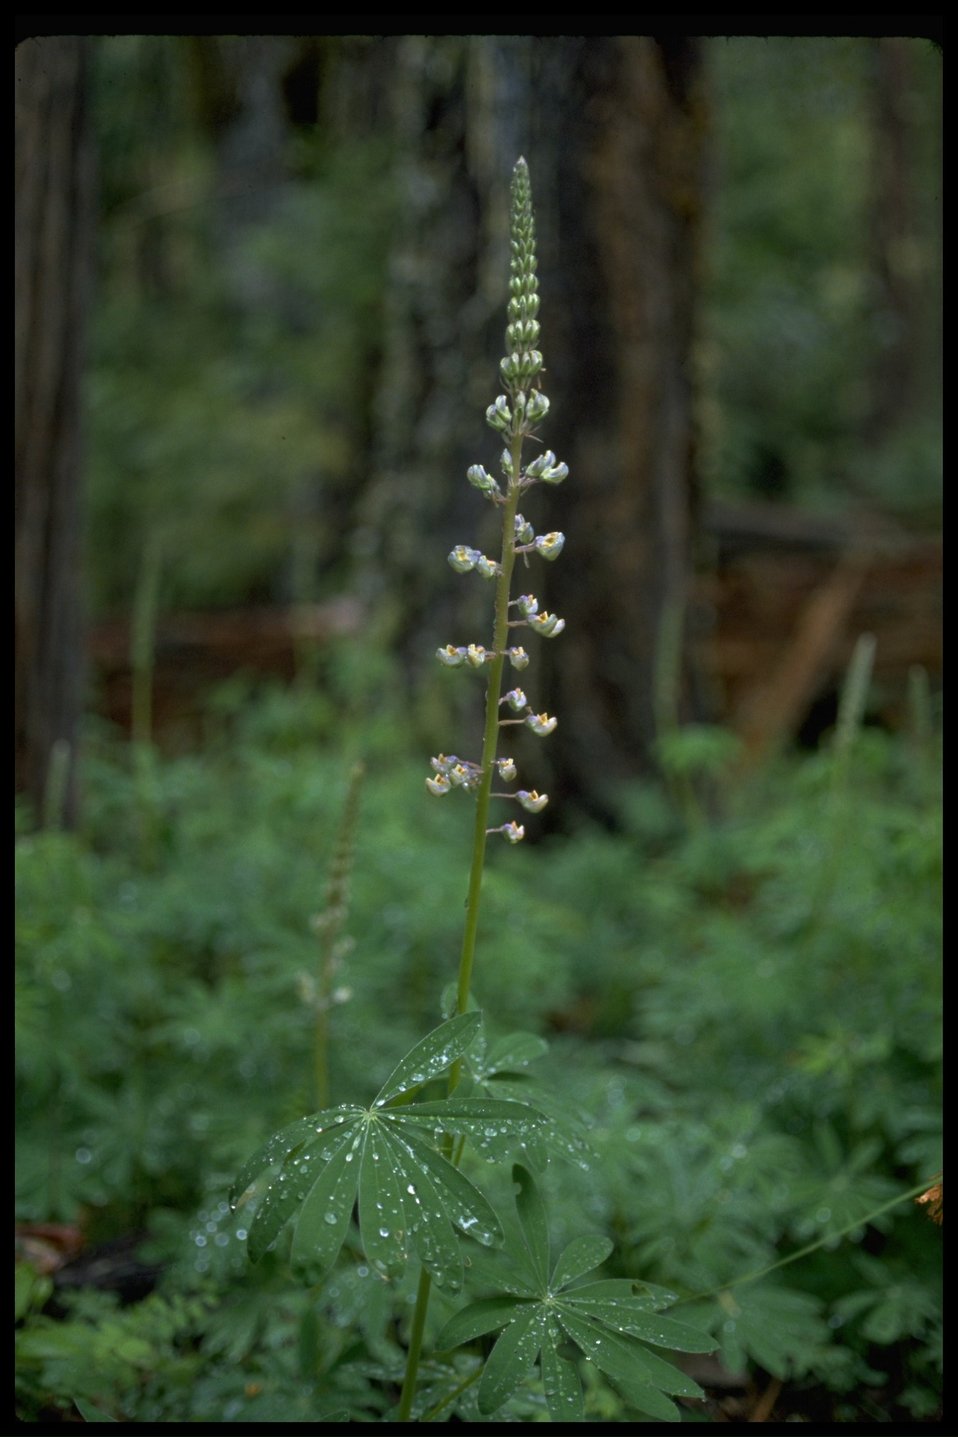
Medium shot of Kincaid's lupine (Lupinus sulphureus ssp. kincaidii).